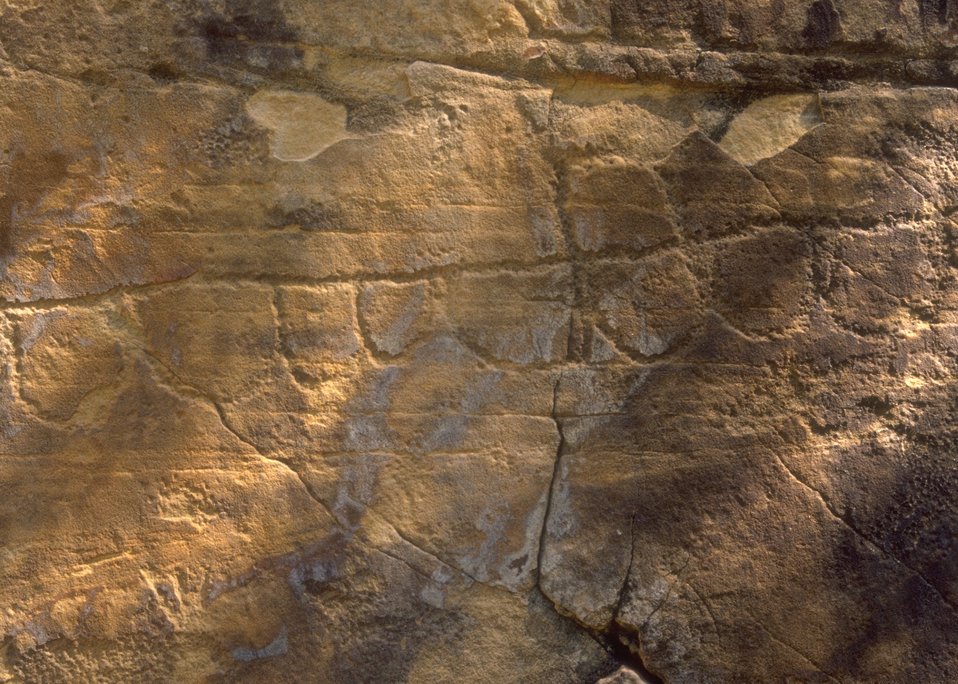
Petroglyph panel in Whoopup Canyon, Newcastle Field Office.